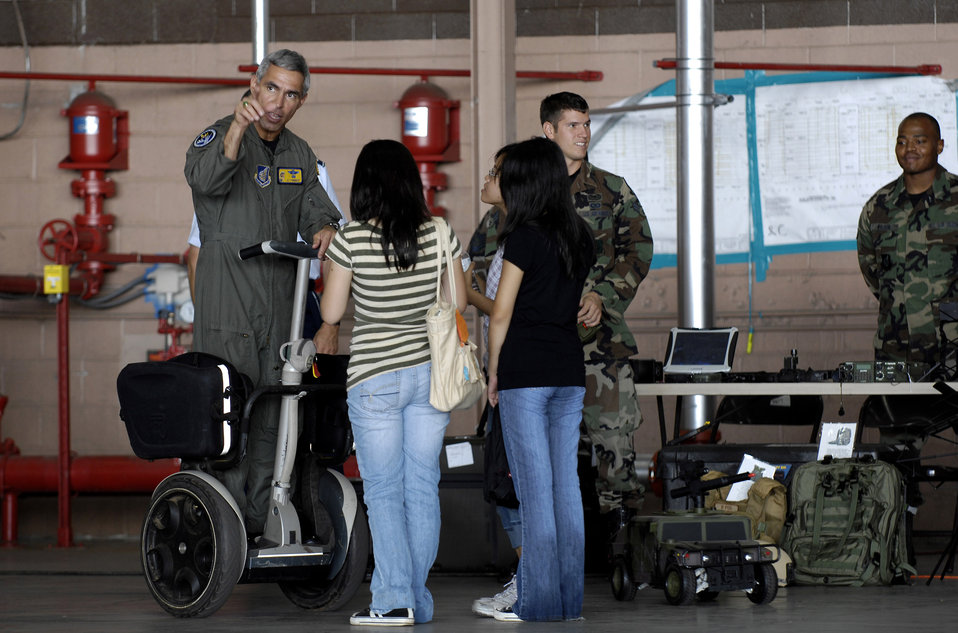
Hickam hosts Education Day

Col. J.J. Torres talks to students Sept. 13 at Hickam Air Force Base, Hawaii, during Air Force Education Day. Members of 13th Air Force hosted the day for Hawaii public school math and science students as part of Air Force Week Honolulu. Colonel Torres is 15th Airlift Wing commander.